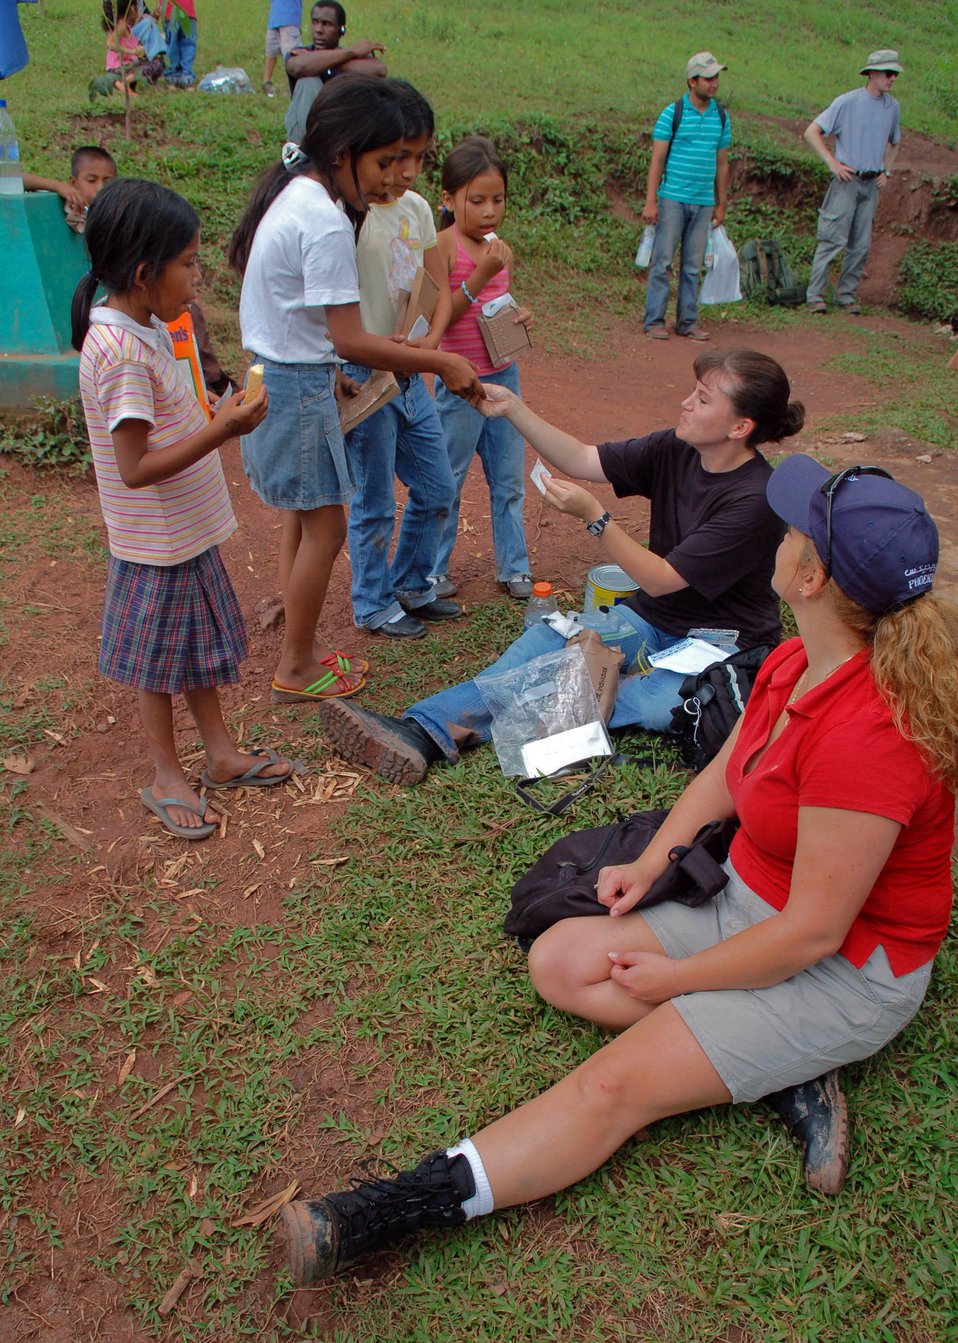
Servicemembers make mountain trek to deliver food

Technical Sergeants Angel Roush and Diane Strohm hand out stickers to a group of young Honduran girls during their lunch break Sept. 29 near the mountains of Comayagua. The two were participating in a nearly five-mile hike that was organized by the Joint Task Force-Bravo Chapel from Soto Cano Air Base, Honduras, to deliver food to families in the mountains. The NCOs are part of the JTF-Bravo Medical Element.